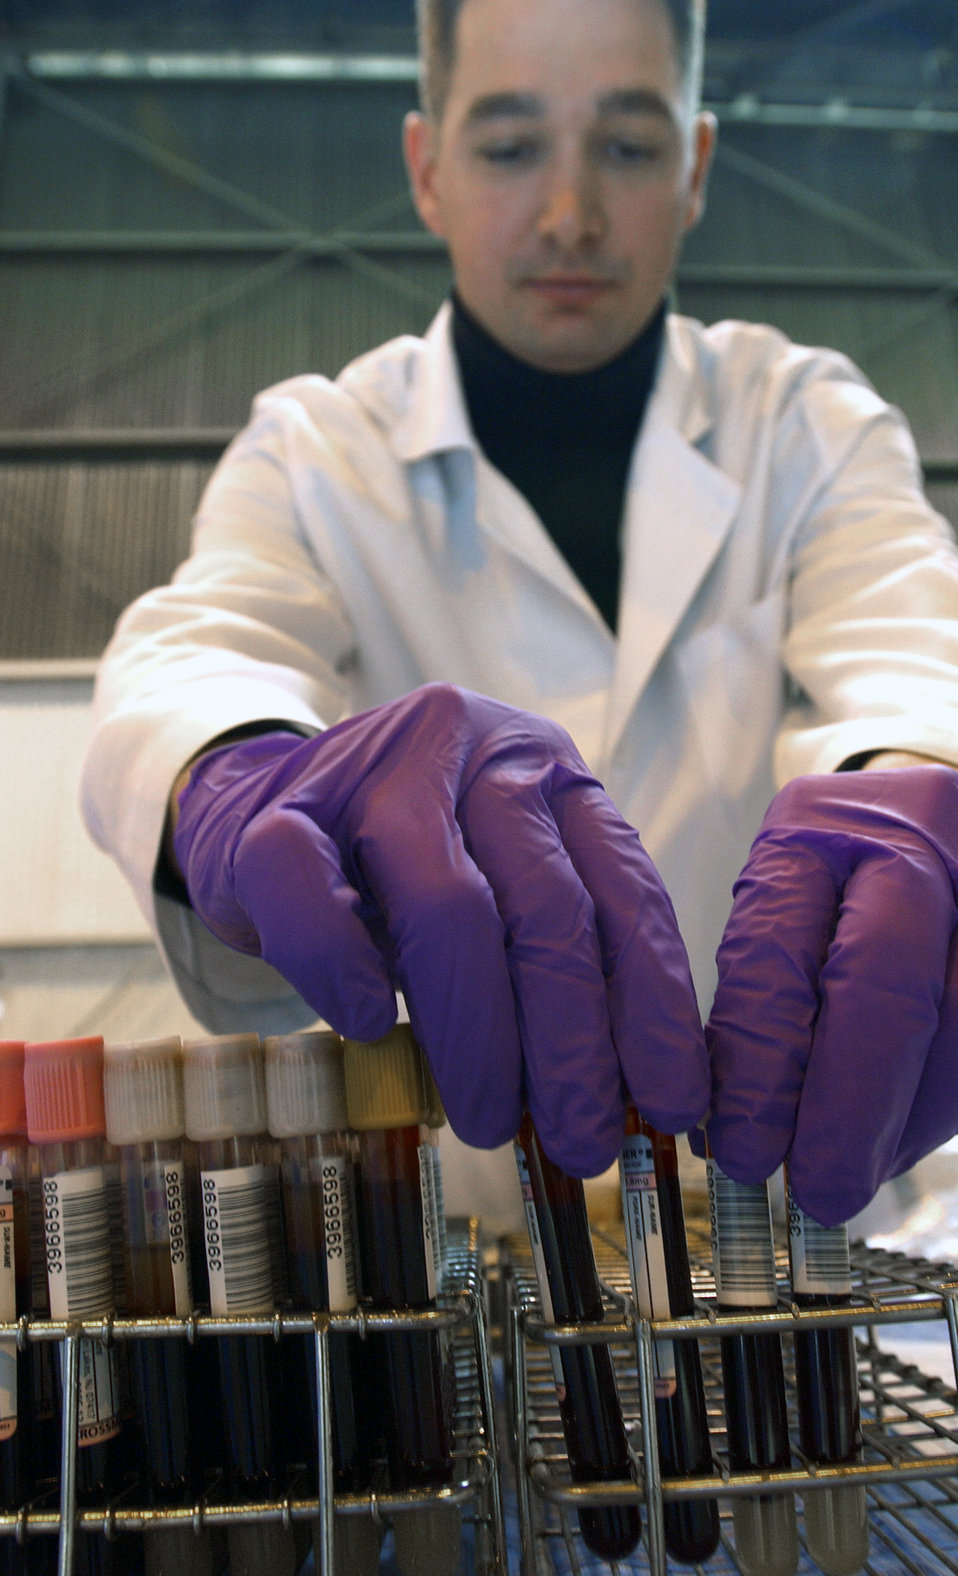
Storing donations

AVIANO AIR BASE, Italy -- Staff Sgt. Matthew Pipes helps preserve blood that was donated from Airmen here March 15 supporting Operation Iraqi Freedom. He is a crew chief with the 31st Maintenance Squadron.